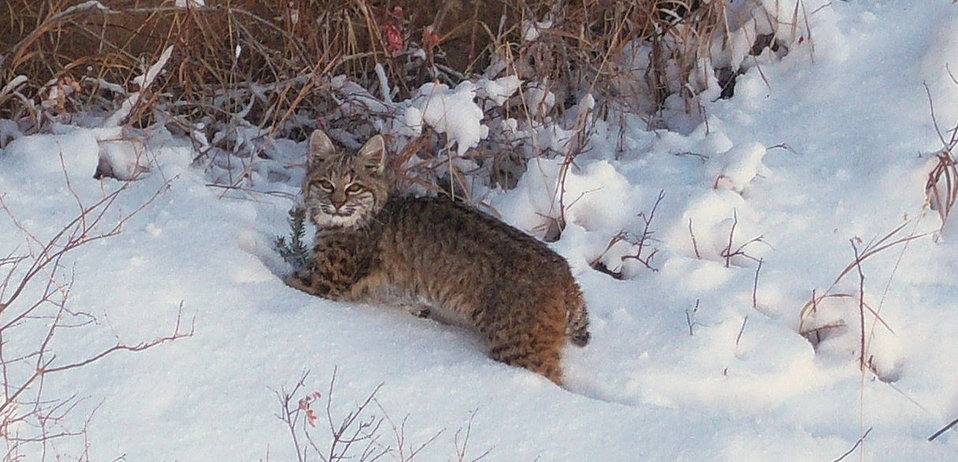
Bobcat in the snow

USFWS